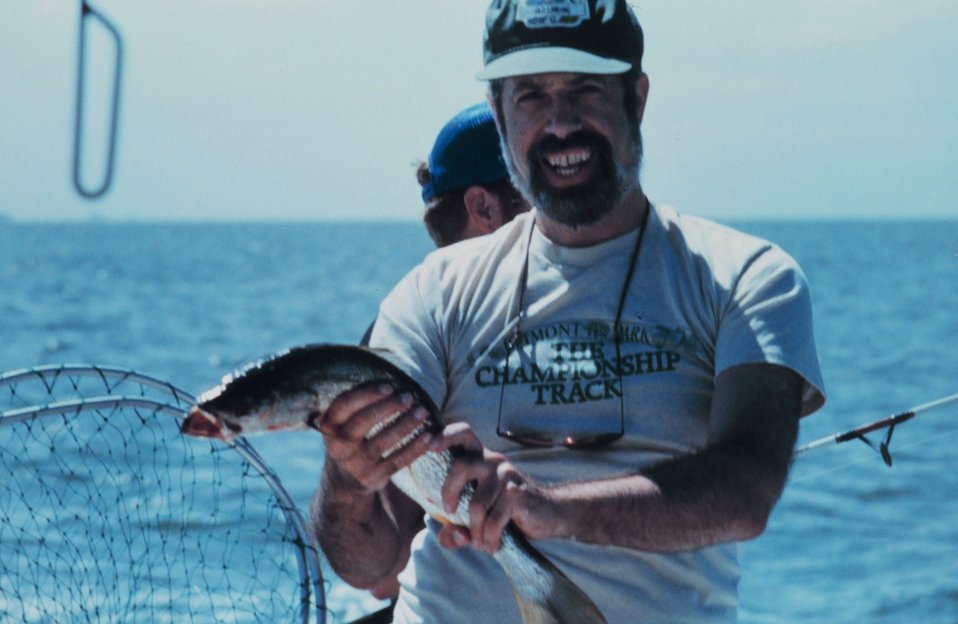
Fishing on the bay.